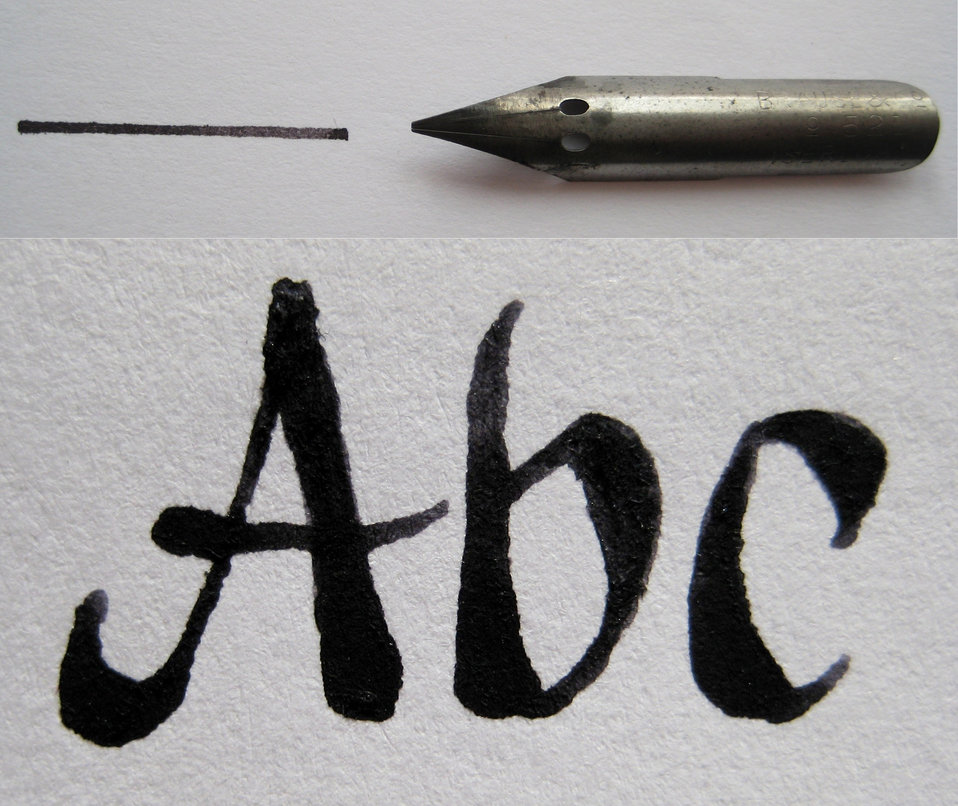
Deutsch: Notenfeder mit Strich und Schriftbeispiel Music nib with a stroke and writing sample Fran√ßais†: Plume √† √©crire la musique avec un trait et un caract√®re typique